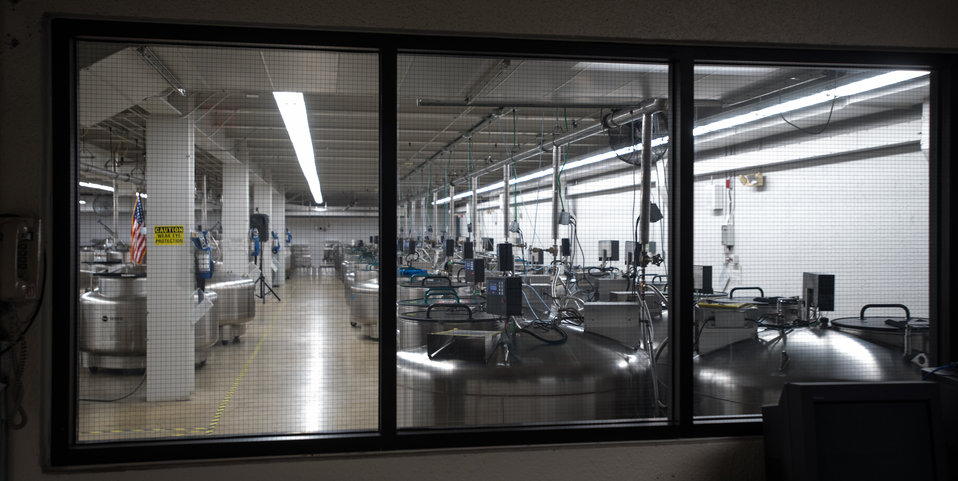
This is the U.S. Department of Agriculture's (USDA) Agriculture Research Service (ARS) National Center for Genetic Resources Preservation (NCGRP) Cryogenic Storage Vault in Ft. Collins, CO on Wednesday, Nov. 6, 2013 The vault currently operates more than 45 cryogenic tanks that hold animal germplasm, plant tissue culture, and seeds that are stored at -196 °C (-321 °F) in liquid storage or to -193 °C (-315 °F) in vapor storage. NCGRP is the largest agricultural gene bank facility in the U.S. The NCGRP staff conducts groundbreaking research to develop more efficient and effective means for preserving plant and animal germplasm, and for better understanding the genetic structure of these invaluable materials. The research findings, preservation techniques, and specialized technology developed by the NCGRP have been adopted by gene banks around the world: many international scientists travel to the NCGRP for research and training.